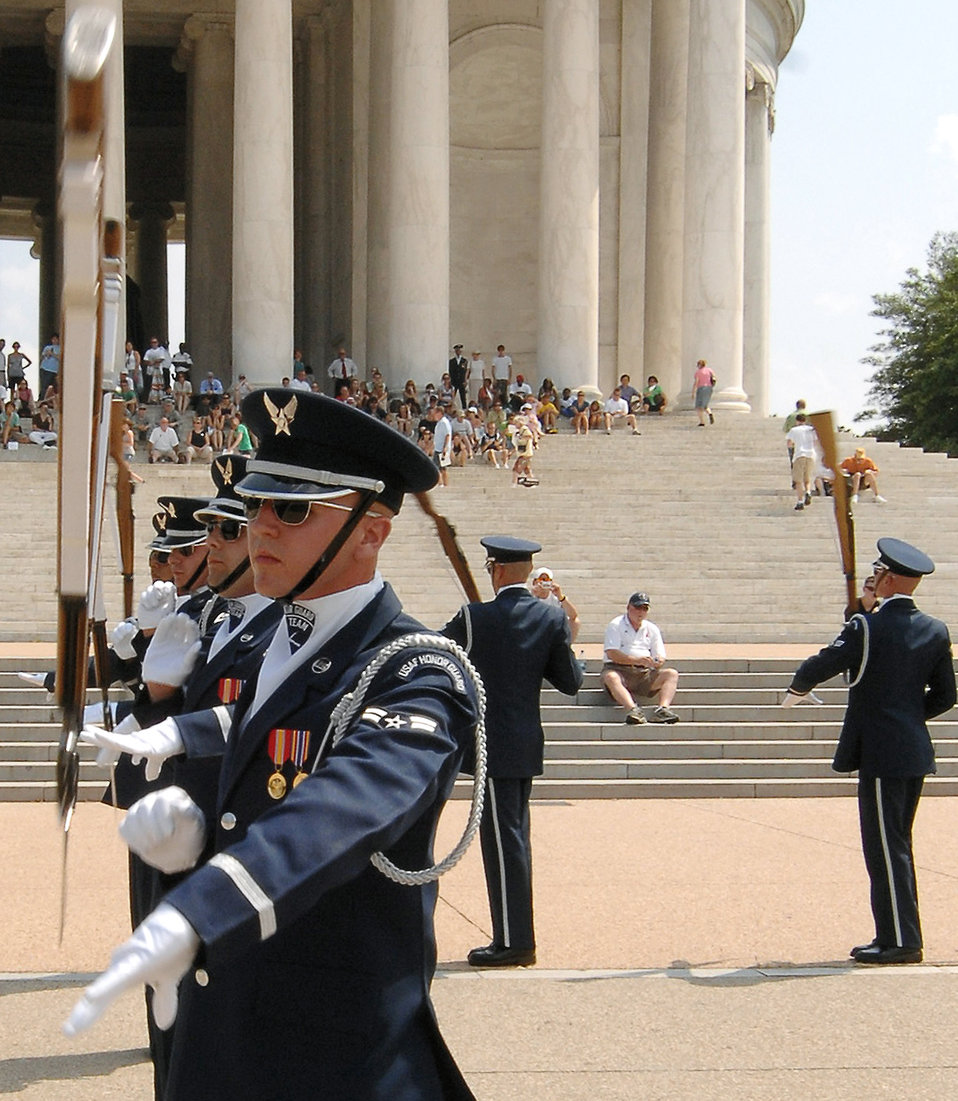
Monumental performance

Airman 1st Class Aaron Fowler, a member of the U.S. Honor Guard Drill Team, spins a